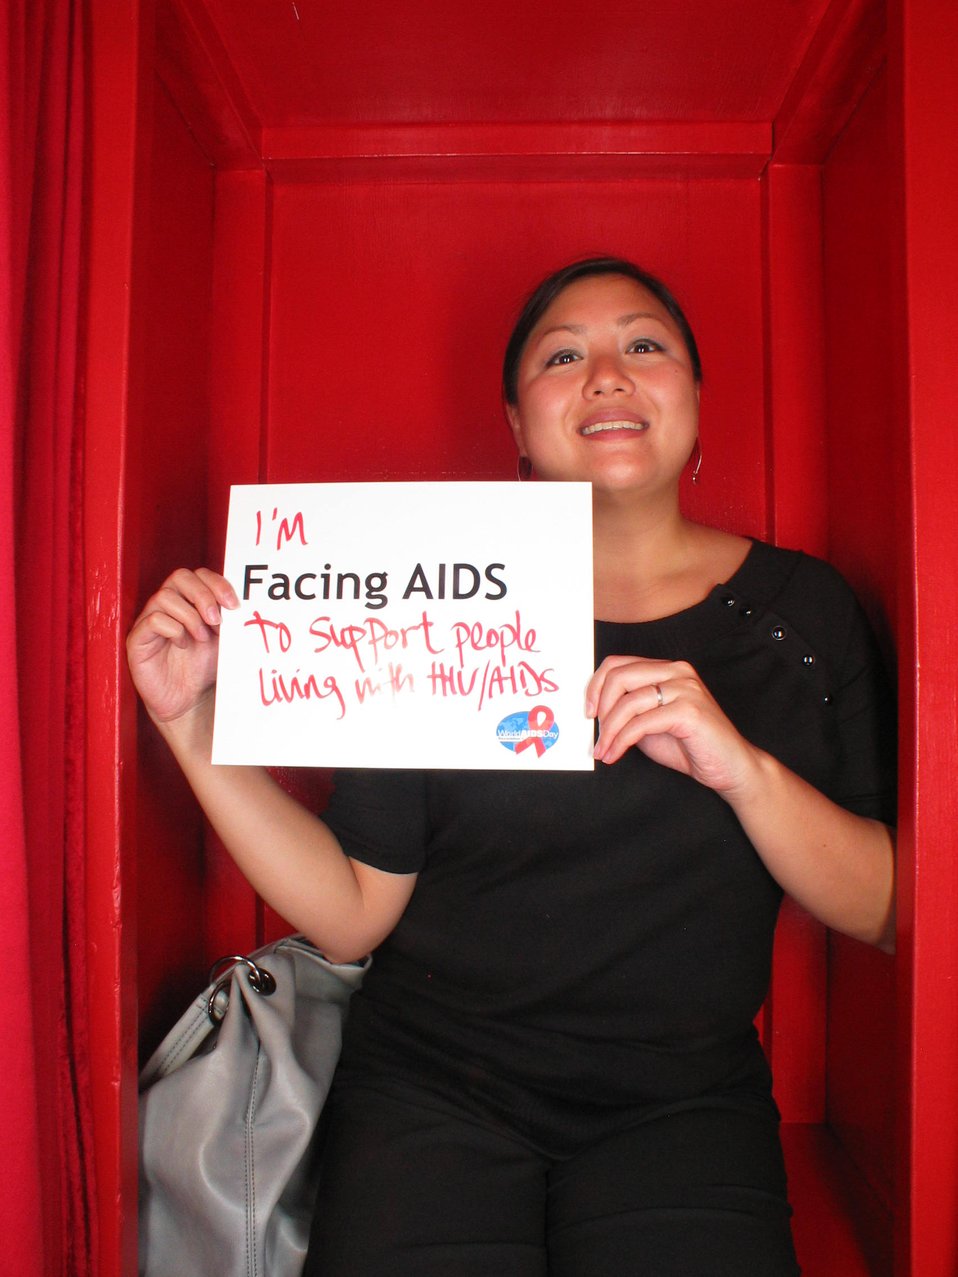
I'm Facing AIDS to support people living with HIV/AIDS.